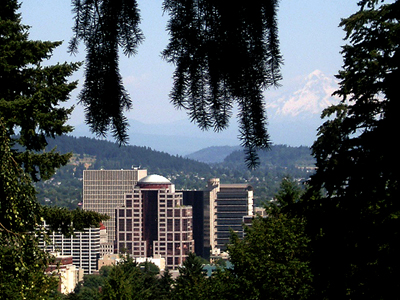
A view of downtown Portland, Oregon centered on the distinctively domed 1000 Broadway building. Mt. Hood rises above the skyline.